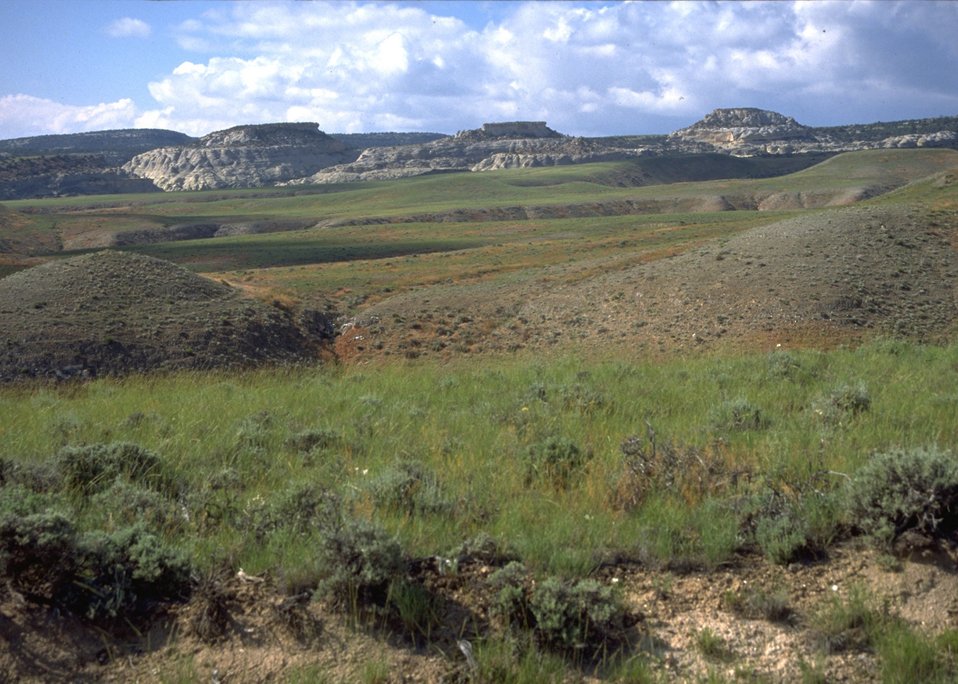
Scenic rock area.